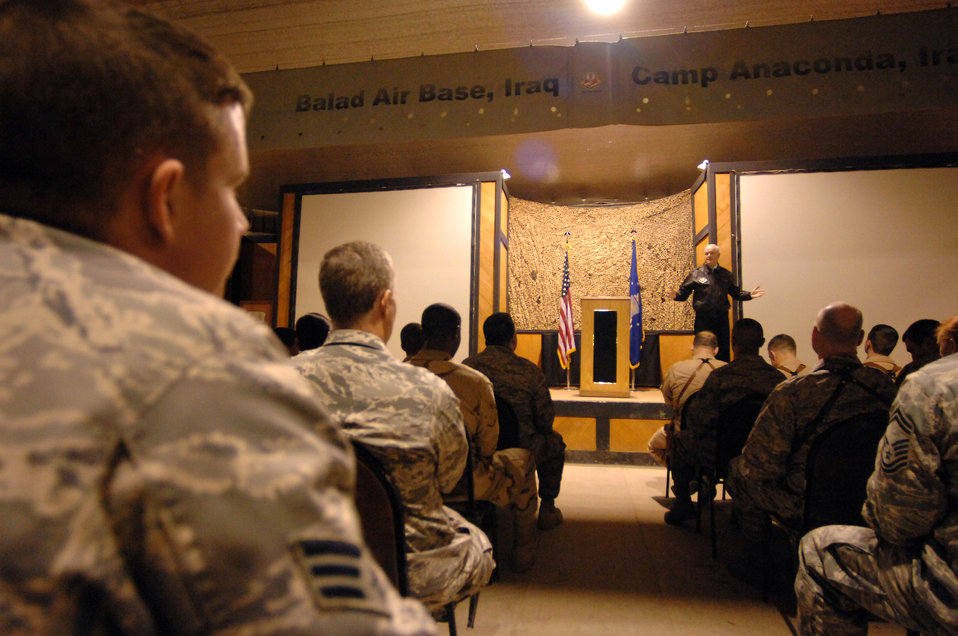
SECAF Visits Balad

Secretary of the Air Force Michael Wynne speaks to Balad Airmen about the importance of their service here, Feb. 2. Secretary Wynne answered questions during an Airmen's Call on the topics of in-lieu-of taskings, the future of airpower, as well as the current and future changes on the horizon for basic training.